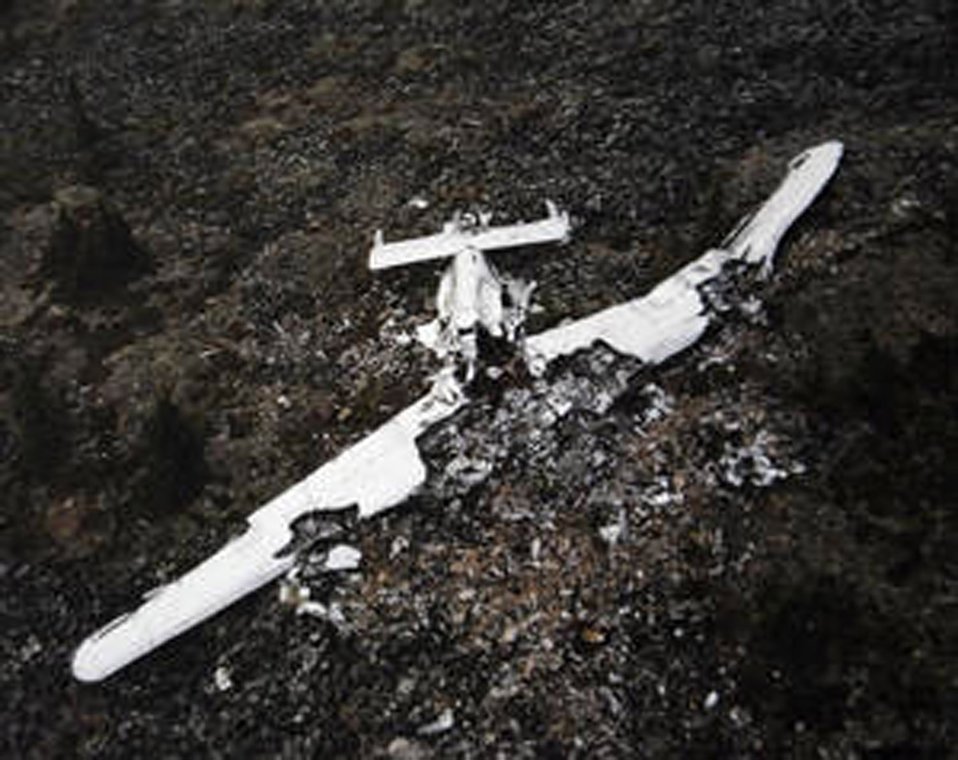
Pilot's survivors thankful for determined historian

A 1943 photo shows the crash site of a B-24 Liberator, which went down in the Alaskan wilderness. The remains of 2nd Lt. Harold E. Hoskin, a World War II Army Air Force member, were recovered from the crash site in August 2006 and identified in April 2007. Lieutenant Hoskin's remains were interred Sept. 7 at Arlington National Cemetery in Virginia